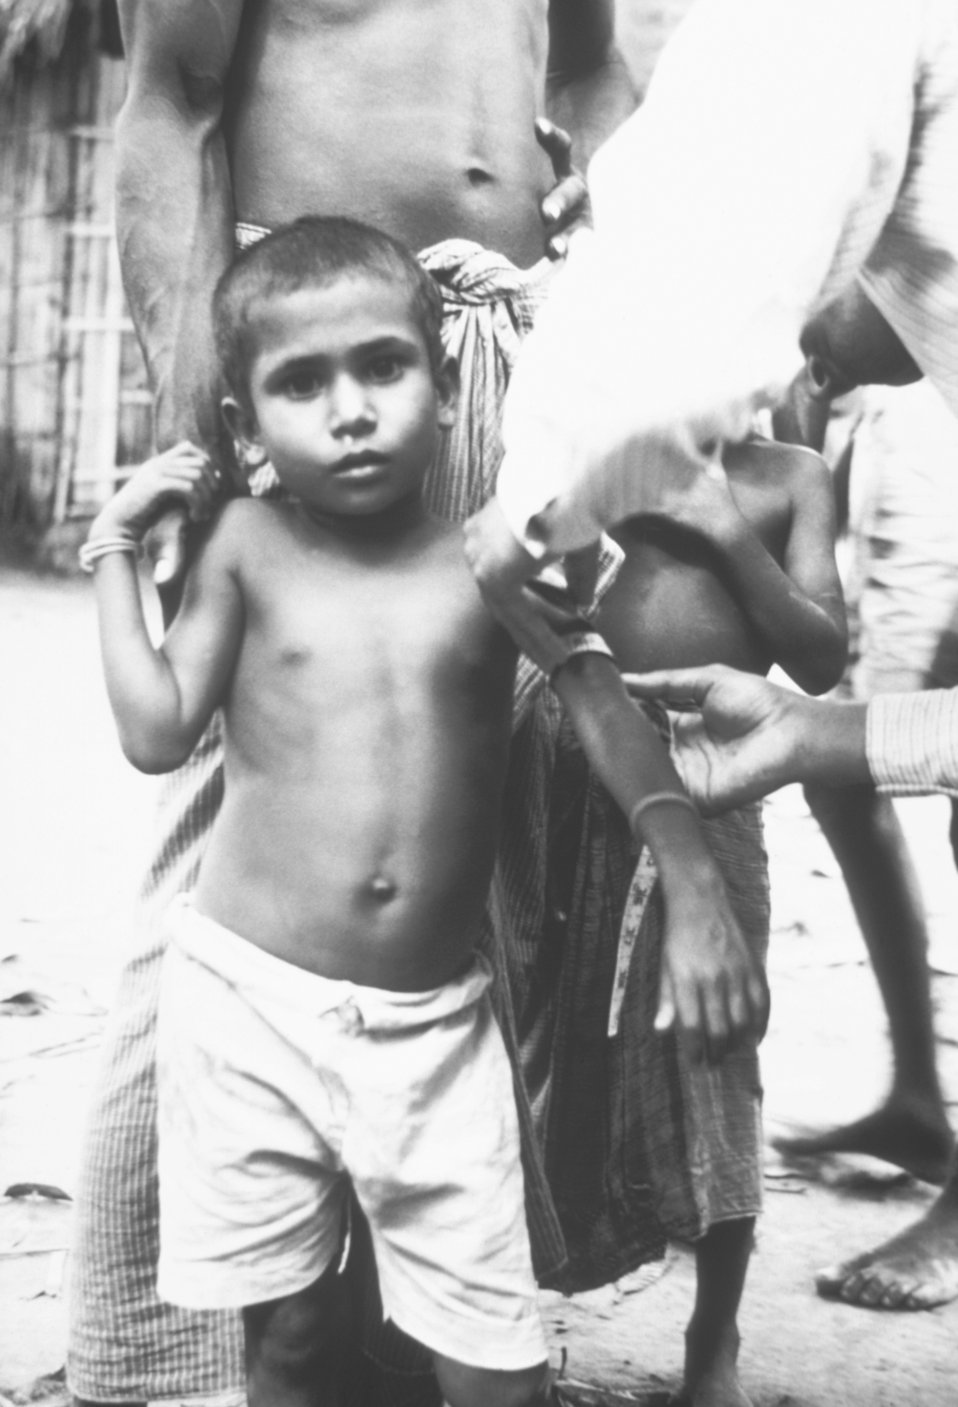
This photograph was taken during a 1974 cholera research and nutrition survey amidst floodwaters around Bangladesh.